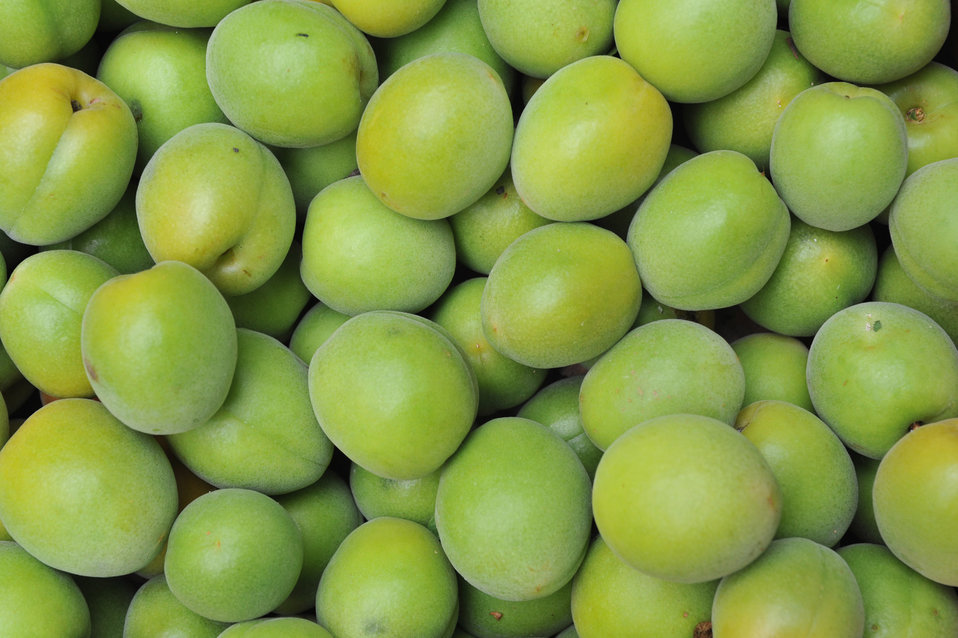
Crop of the japanese apricot 2

Crop of the japanese apricot.